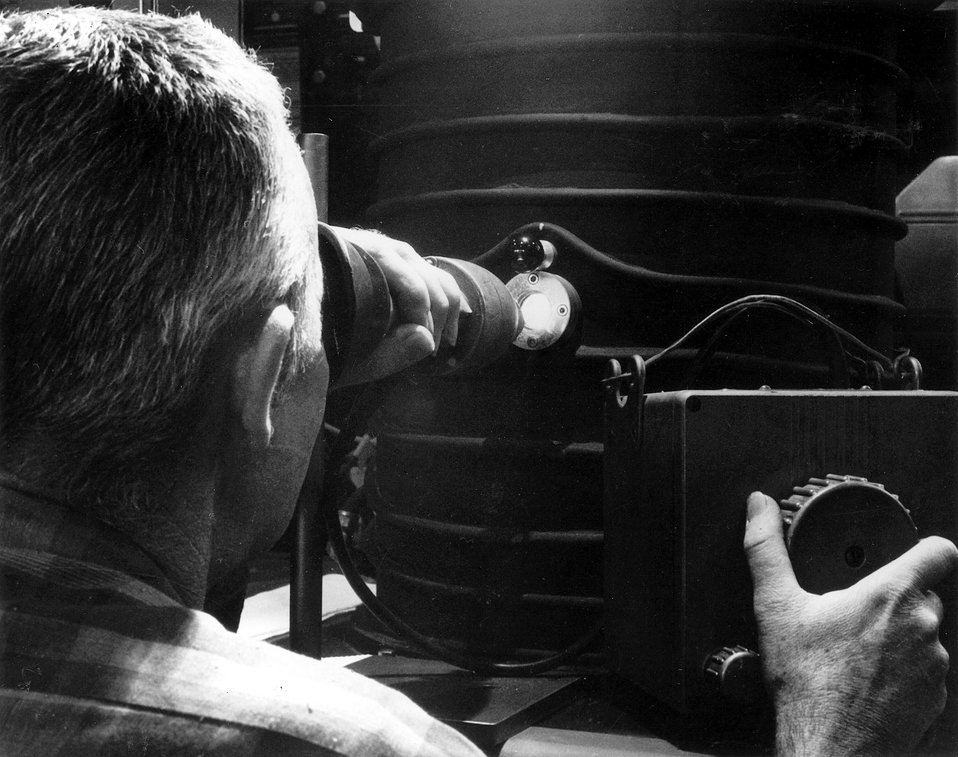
A new generation of reactor instrumentation is under development at Argonne.
c.1970